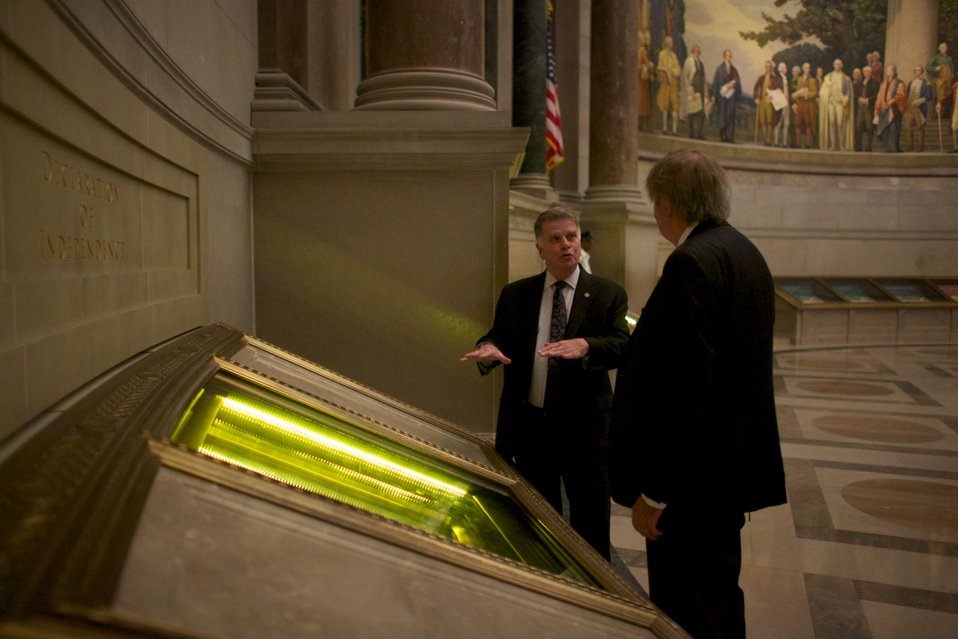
The Keillor Reader